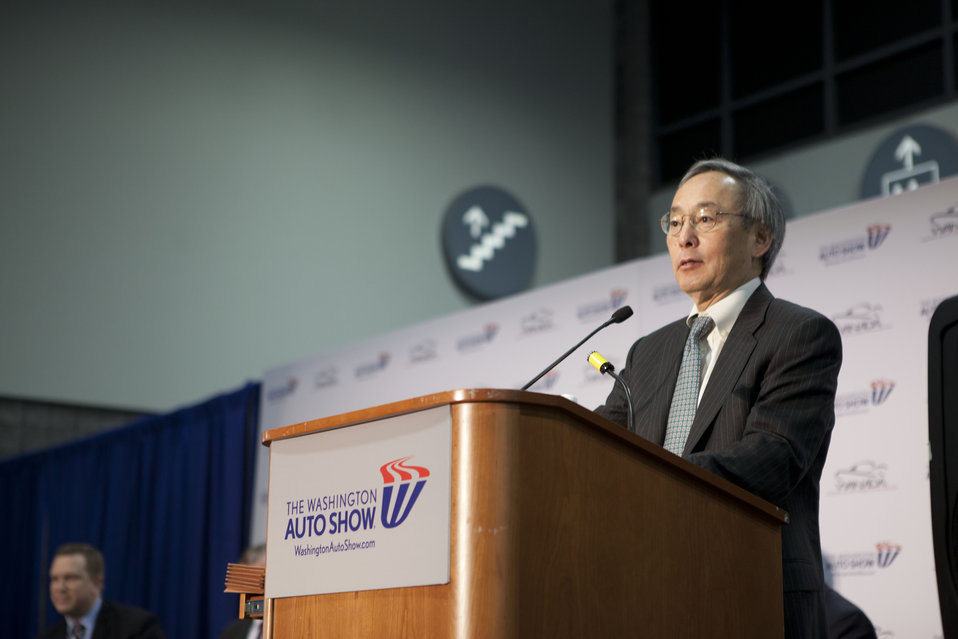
Today at the Washington Auto Show, Energy Secretary Steven Chu announced a new EV Everywhere initiative -- the Workplace Charging Challenge -- designed to increase the convenience of owning an electric vehicle by expanding consumer access to charging stations.